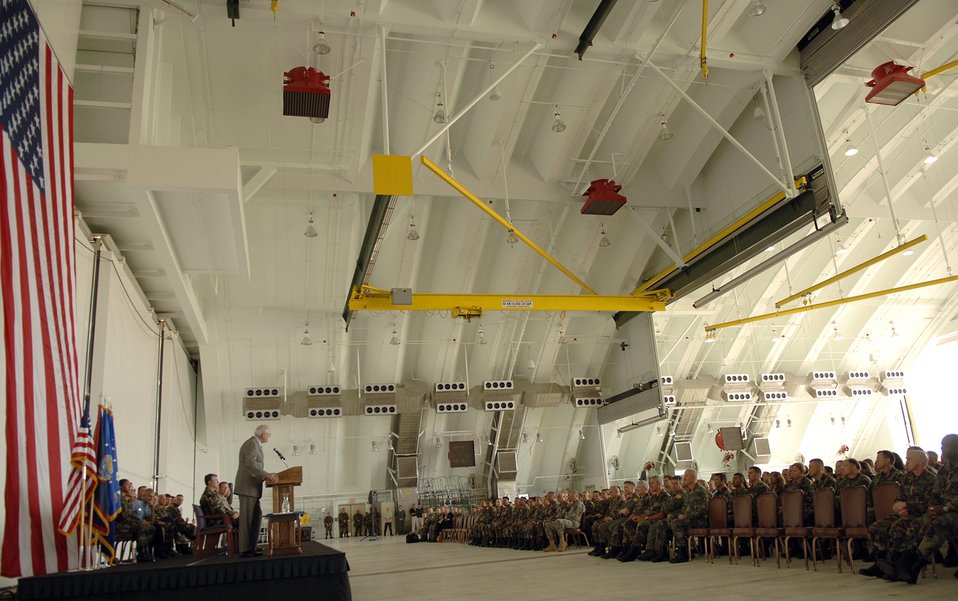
Secretary of the Air Force at Andersen

Secretary of the Air Force Michael W. Wynne speaks to Airmen about Air Force Smart Operations 21 at Andersen Air Force Base, Guam, Monday, March 20, 2006. Secretary Wynne is responsible for organizing, training, equipping and providing for the welfare of nearly 370,000 men and women on active duty, 180,000 members of the Air National Guard and the Air Force Reserve, 160,000 civilians, and their families.